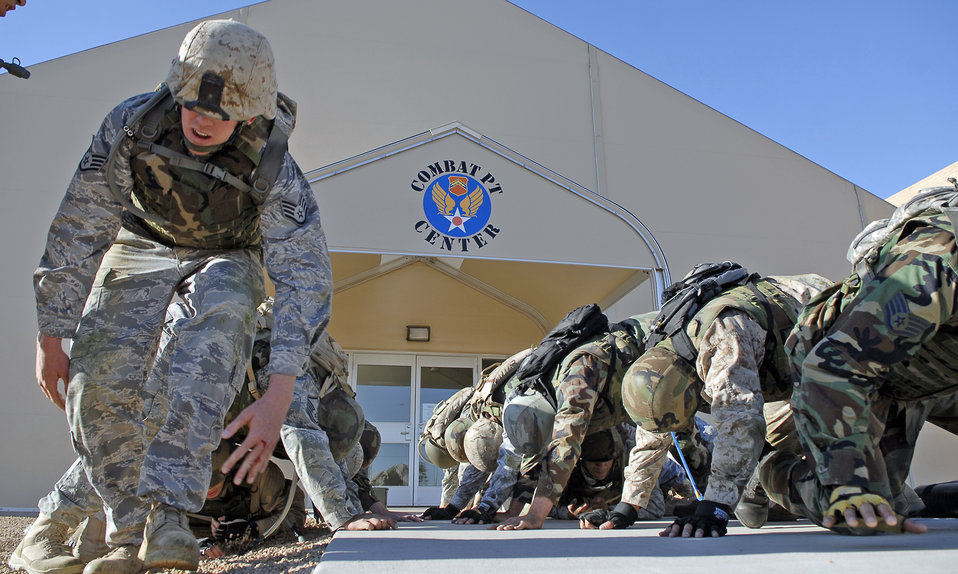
Luke Airmen train for combat

Staff Sgt. Ryan Cobb (left) positions himself to continue